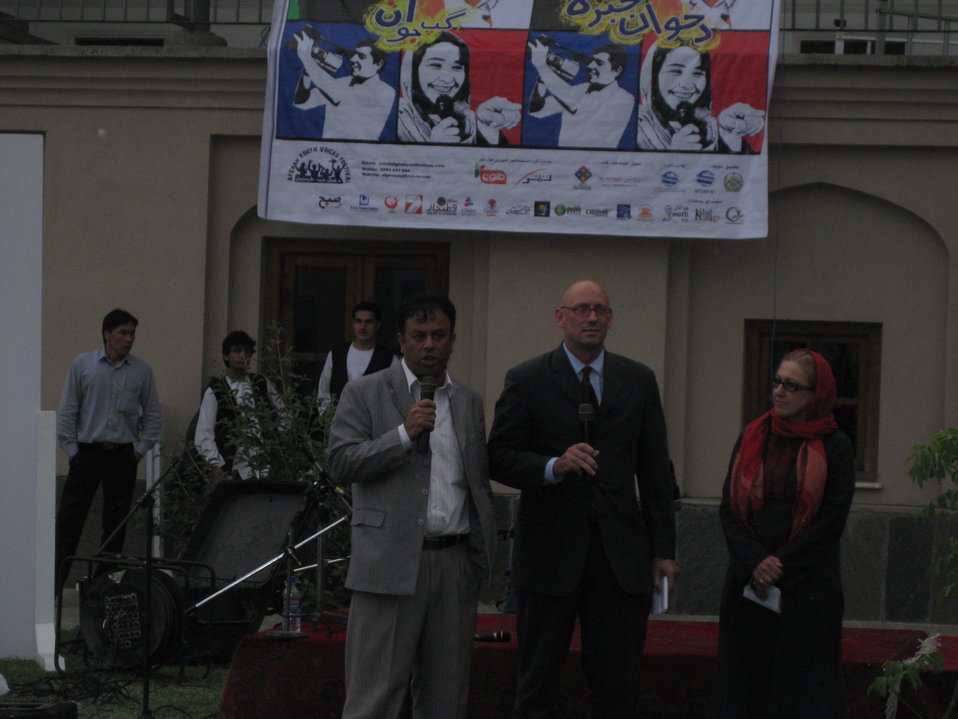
Afghan Youth Voices 116